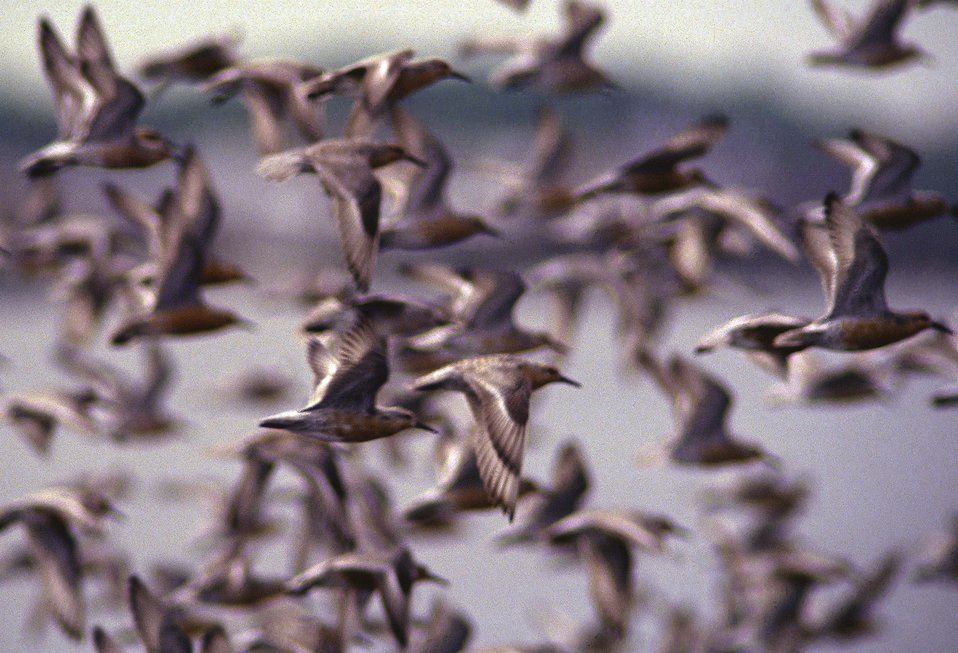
Red Knots in Flight

Reed's Beach, NJ.